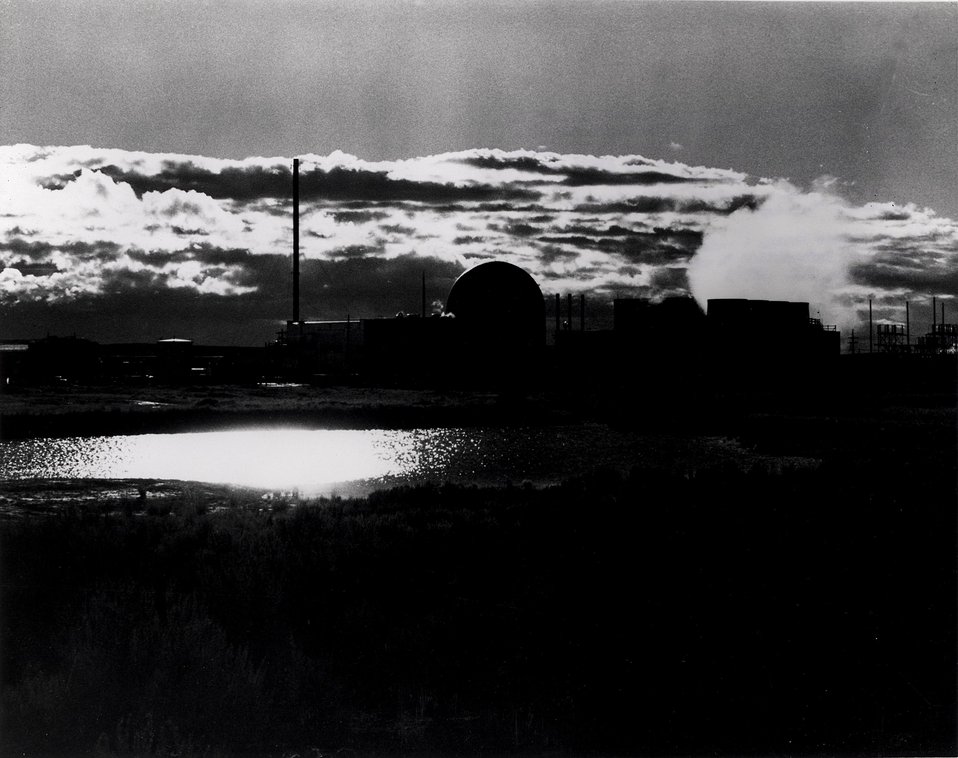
EBR-II continues to function as the AEC's prime irradiation facility for experimental fast breeder reactor fuels.
c.1972